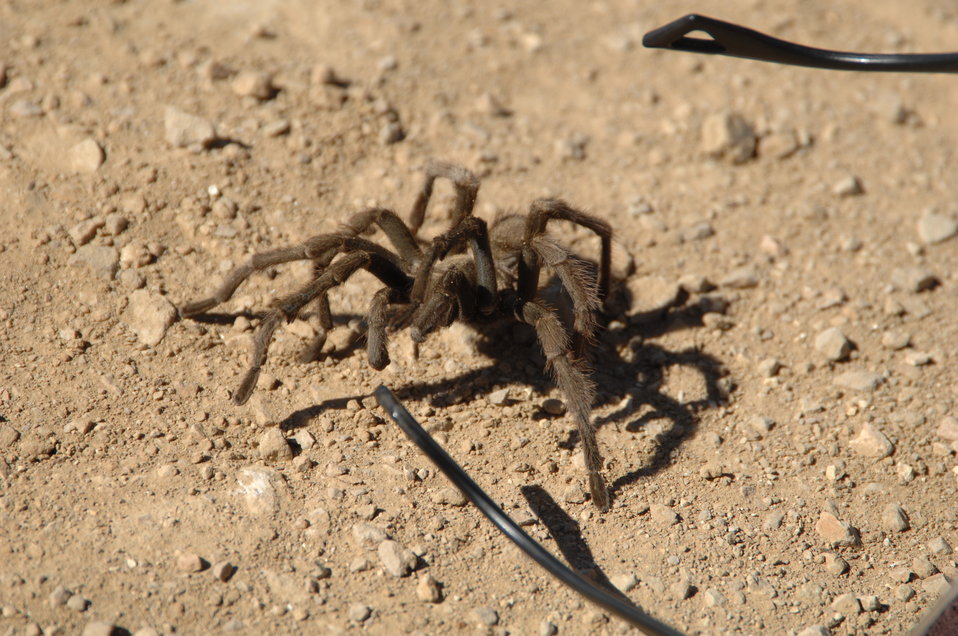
Tarantula in the Carrizo Plain